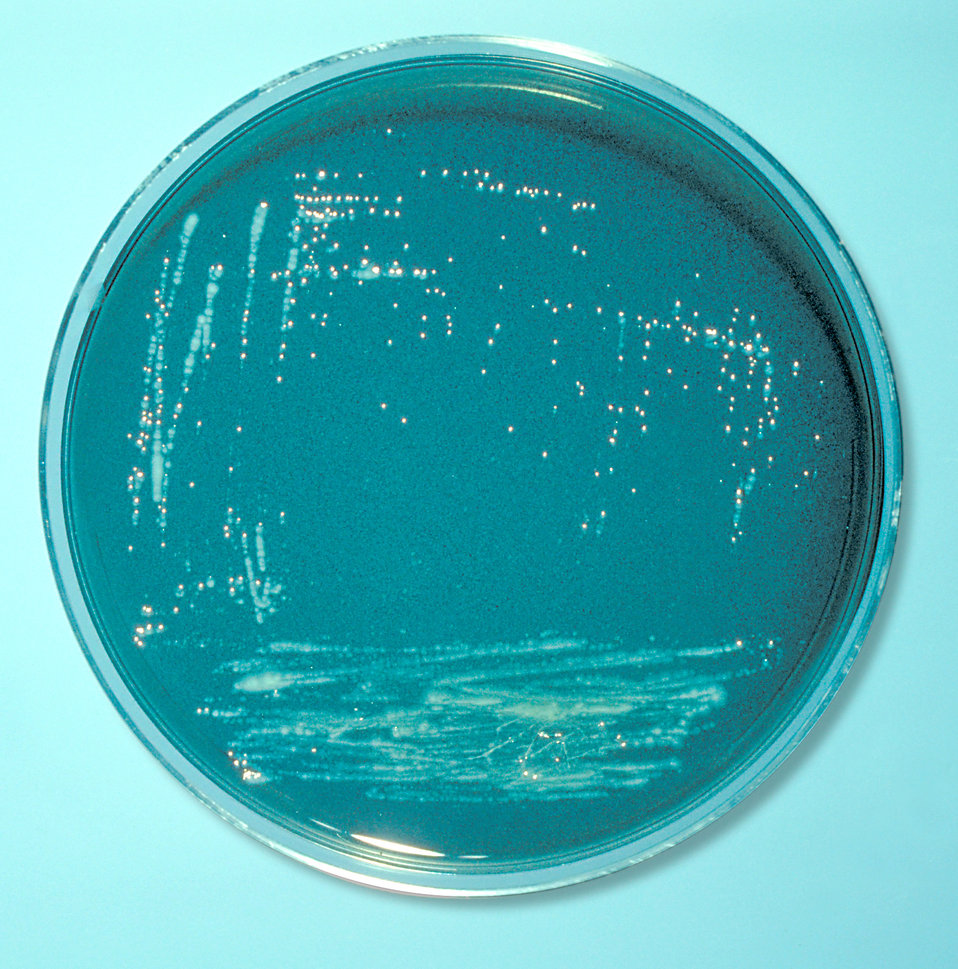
Charcoal-yeast extract agar plate culture of Legionella pneumophila.